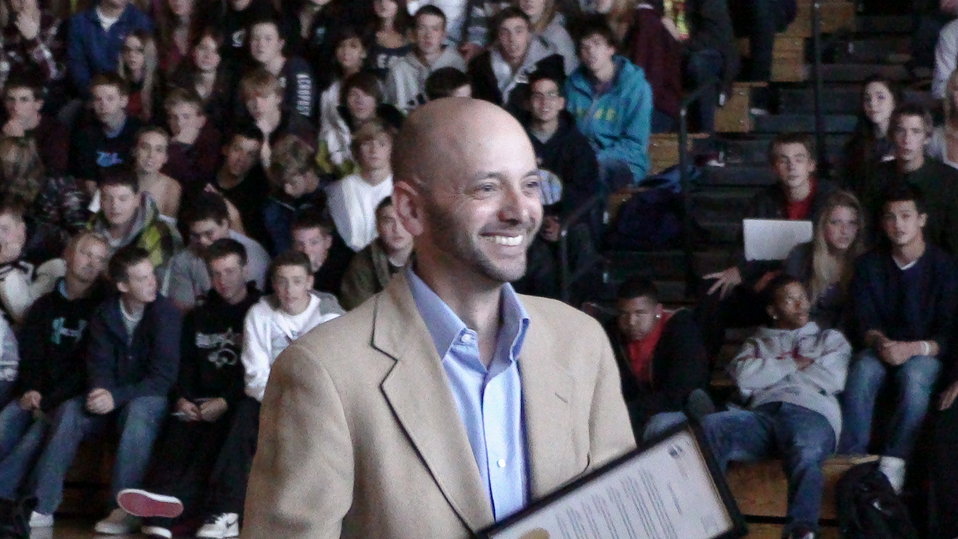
Golden High School NDFW Event

Golden Colorado, Mayor Jacob Smith Presenting the NDFW proclamation to the 1,300 students at Golden High School.